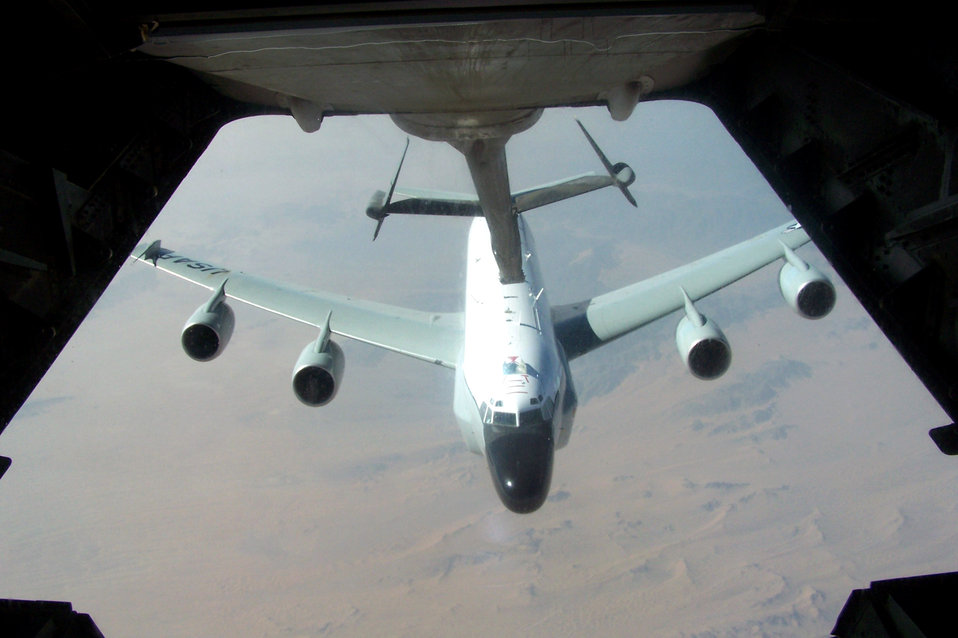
Filling up on freedom

An RC-135 Rivet Joint aircraft pulls up to the boom of a KC-10 Extender during an air refueling mission Oct. 17 over Southwest Asia. Aircraft from the 908th Expeditionary Air Refueling Squadron, including the KC-10 and KC-135 Stratotanker, provide fuel for coalition aircraft missions for Operations Iraqi Freedom and Enduring Freedom. The squadron is attached to the 380th Air Expeditionary Wing, the largest air refueling wing in Southwest Asia.